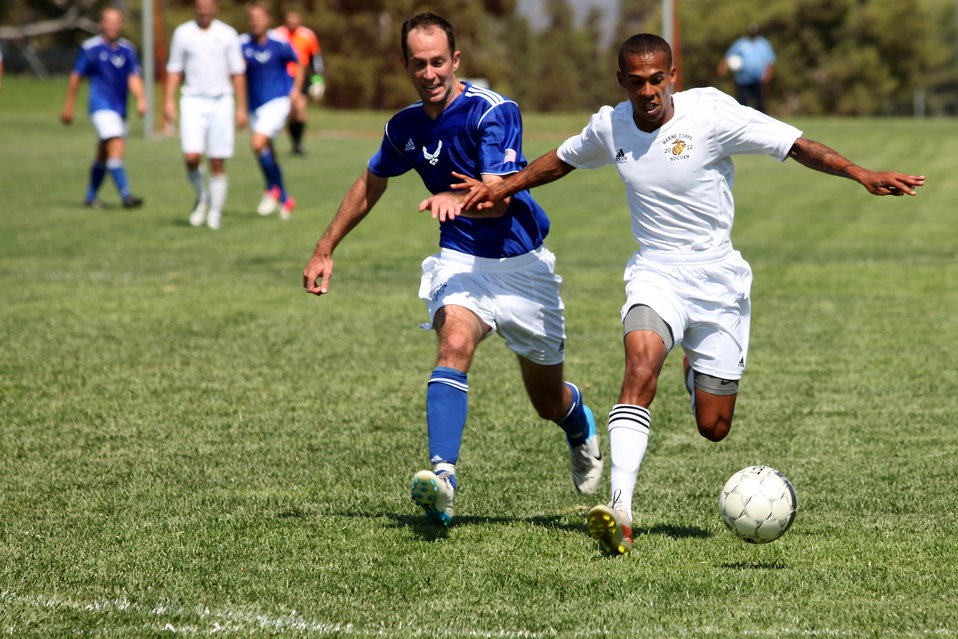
Armed Forces Soccer Championship

Cpl. Bryant Haskinjames, a foward for the Marine Corps team, fights off an Air Force defender as he dribbles toward the goal during the 2012 Armed Forces Men's Soccer Championship at Camp Pendleton, Calif.. The Air Force team defeated the Marine Corps team 2-1, handing the Marines their first loss of the tournament.